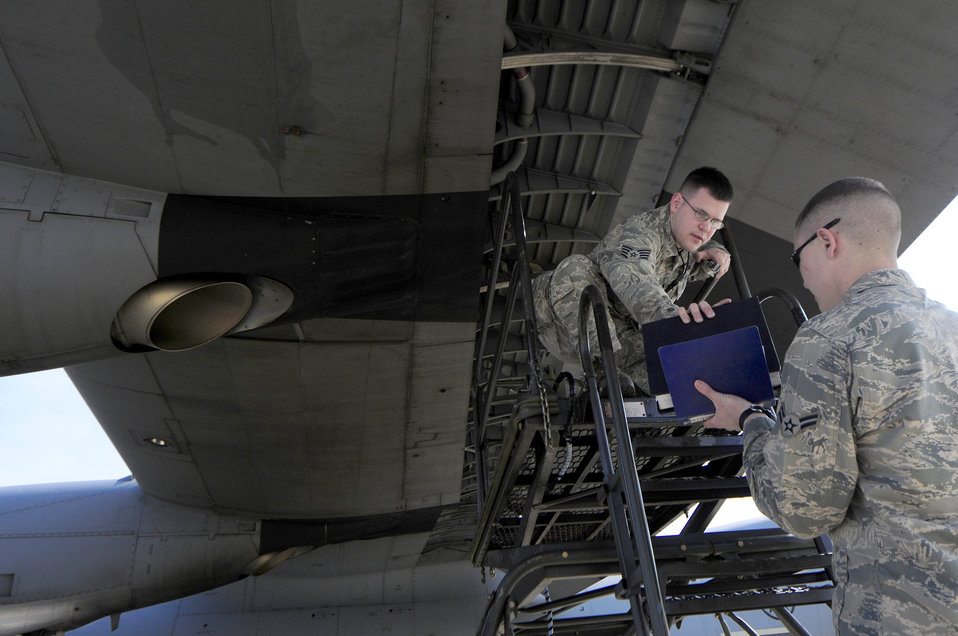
Airmen support Odyssey Dawn

Staff Sgt. Matthew Johnson (left) and Airman 1st Class Ryan Pate prepare to perform post-flight maintenance on a C-130J Super Hercules March 25, 2011, at Ramstein Air Base, Germany, after its return from a mission in support of Operation Odyssey Dawn. Both Johnson and Pate are assigned to the 86th Aircraft Maintenance Squadron.